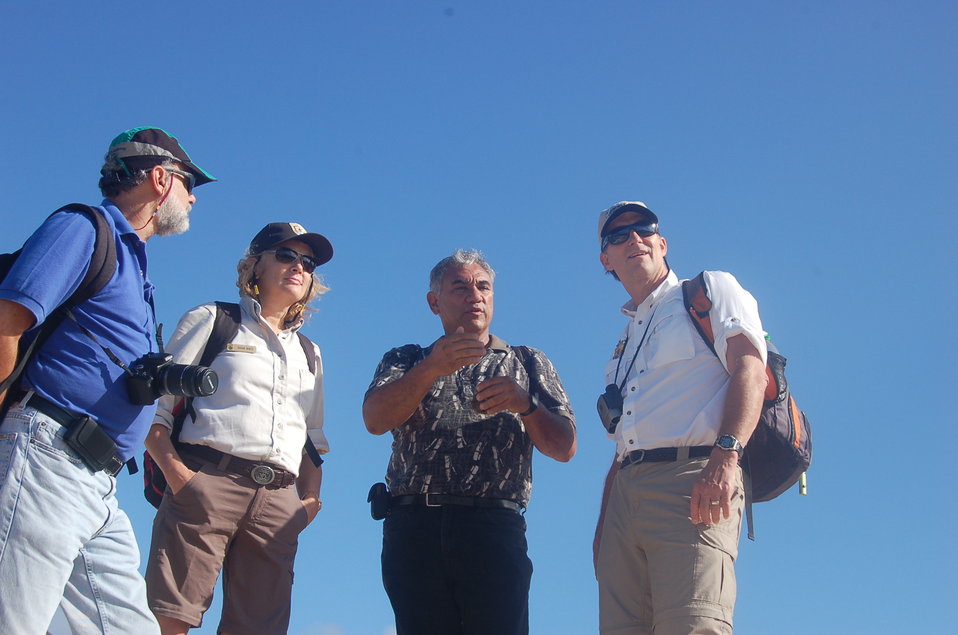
Dan Ashe tours Ka'ena Point State Park in Hawaii

William 'Aila Jr., Hawaii State Director of the Department of Land and Natural Resources talks about the land.